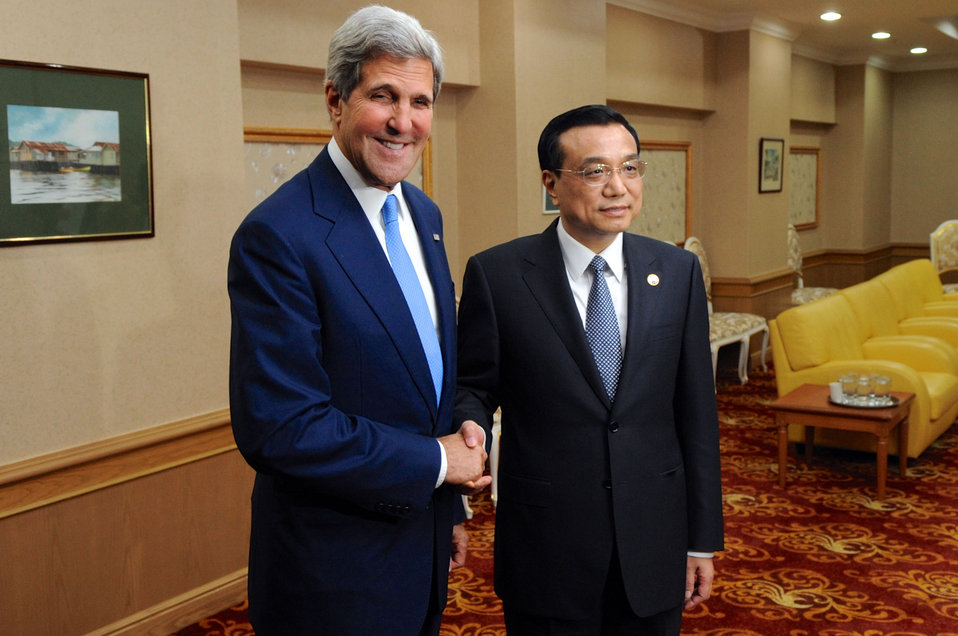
Secretary Kerry and Chinese Premier Li Shake Hands Before Their Meeting

U.S. Secretary of State John Kerry and Chinese Premier Li Keqiang shakes hands for photographers before a meeting on the margins of the U.S.-ASEAN Summit in Bandar Seri Begawan, Brunei, on October 9, 2013.